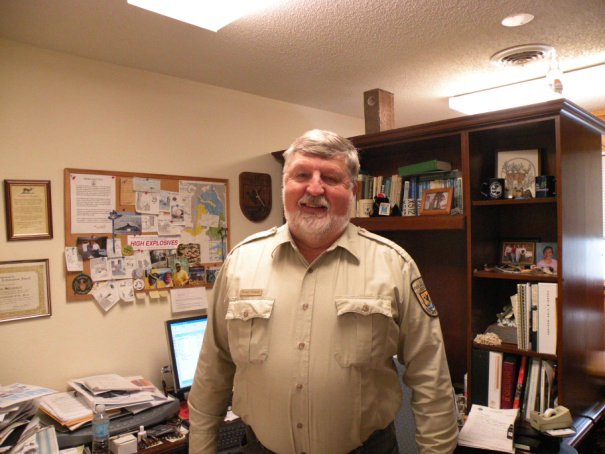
Dennis Stewart, Alligator River National Wildlife Refuge Wildlife Biologist, served in the U. S. Army from 1971 to 1973.